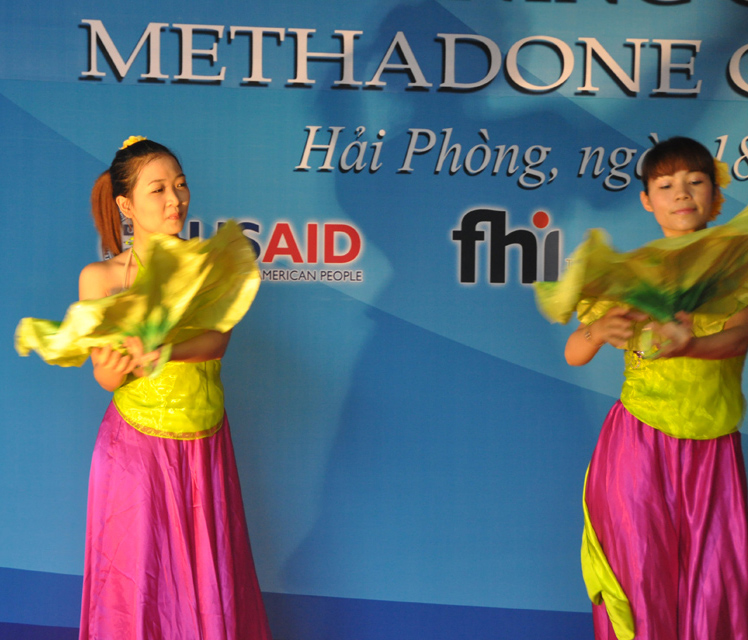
Co-pay Methadone Treatment Center Opens in Hai Phong on June 18, 2011